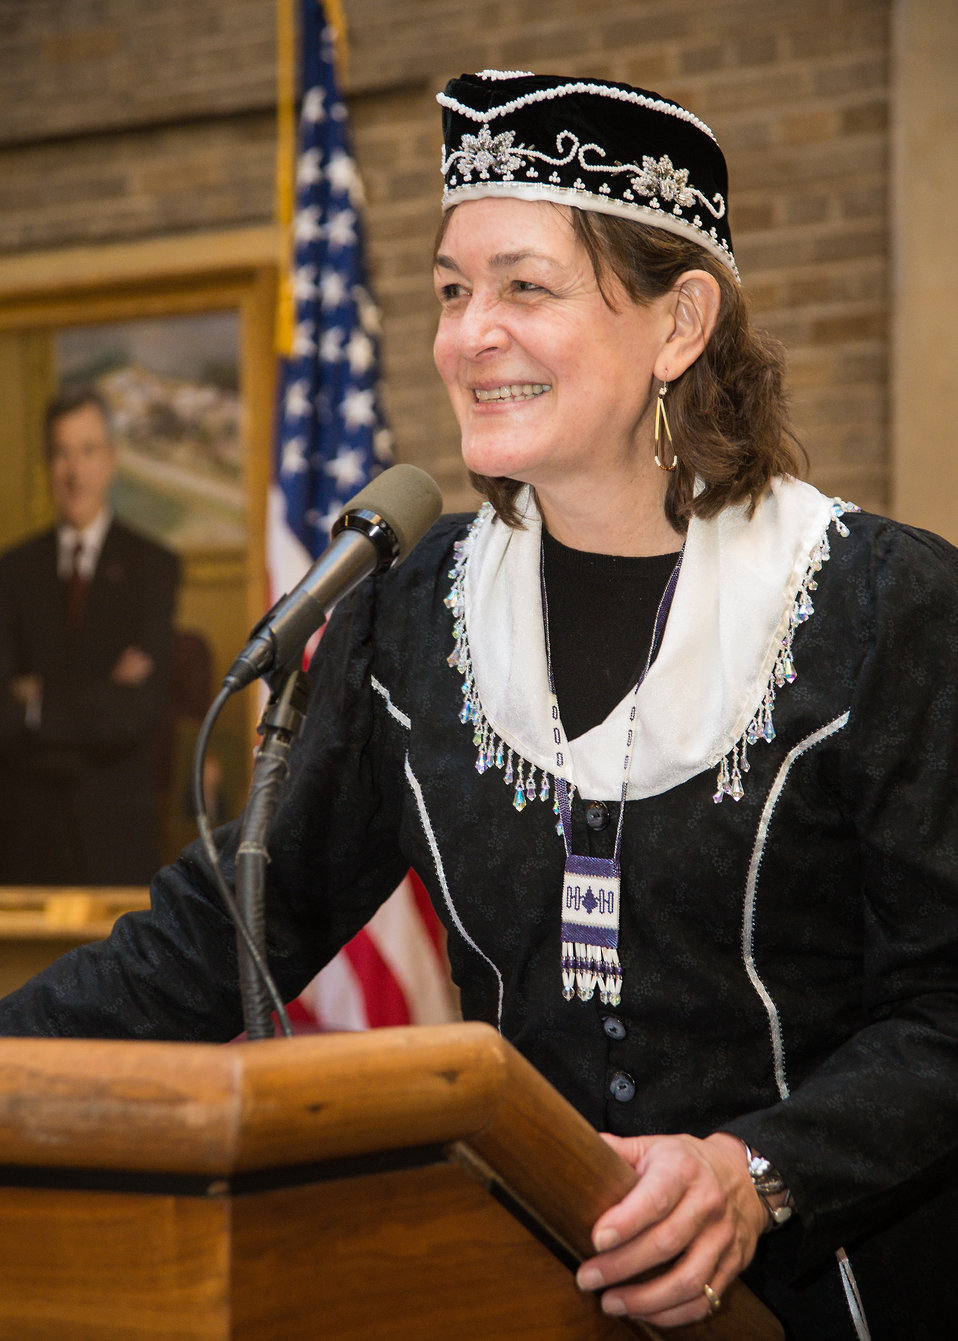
U.S. Department of Agriculture (USDA) Office of Tribal Relations (OTR) Director Onieda Nation of Wisconsin Leslie Wheelock welcomes employees and guests to the 2013 American Indian and Alaska Native Heritage Observance at the USDA on Thursday, Nov. 14, 2013 in Washington, D.C. The theme of this year’s event was “Guiding Our Destiny with Heritage and Traditions.”